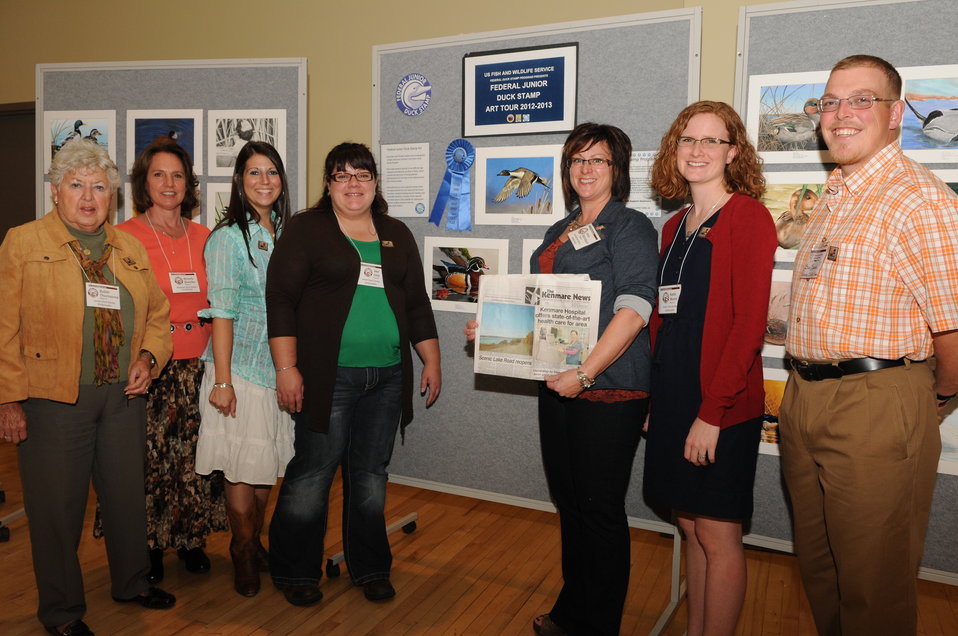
Volunteers

The U.S. Fish & Wildlife Service sponsored the 2012 Federal Duck Stamp Art Contest September 28 and 29 in Ogden, Utah, at Weber State University. A panel of five judges was responsible for choosing the art work used to design the 2013-2014 Migratory Bird Hunting and Conservation Stamp.